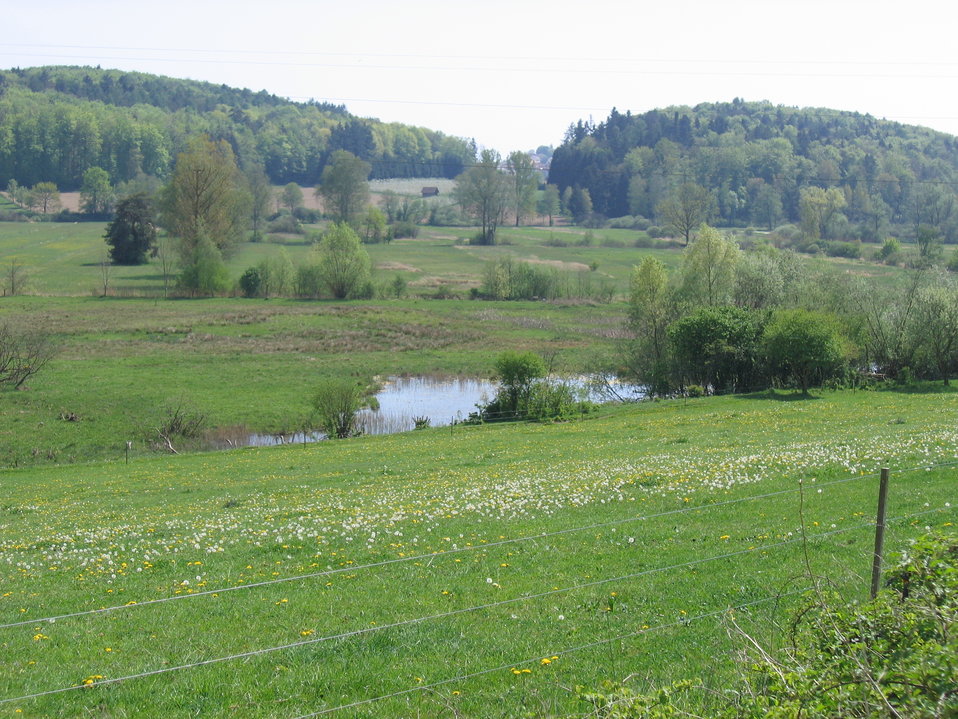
Deutsch: Deutschland - Baden-Württemberg - Bodenseekreis - Friedrichshafen/Markdorf/Oberteuringen: Natur- und Landschaftsschutzgebiet Hepbacher-Leimbacher Ried